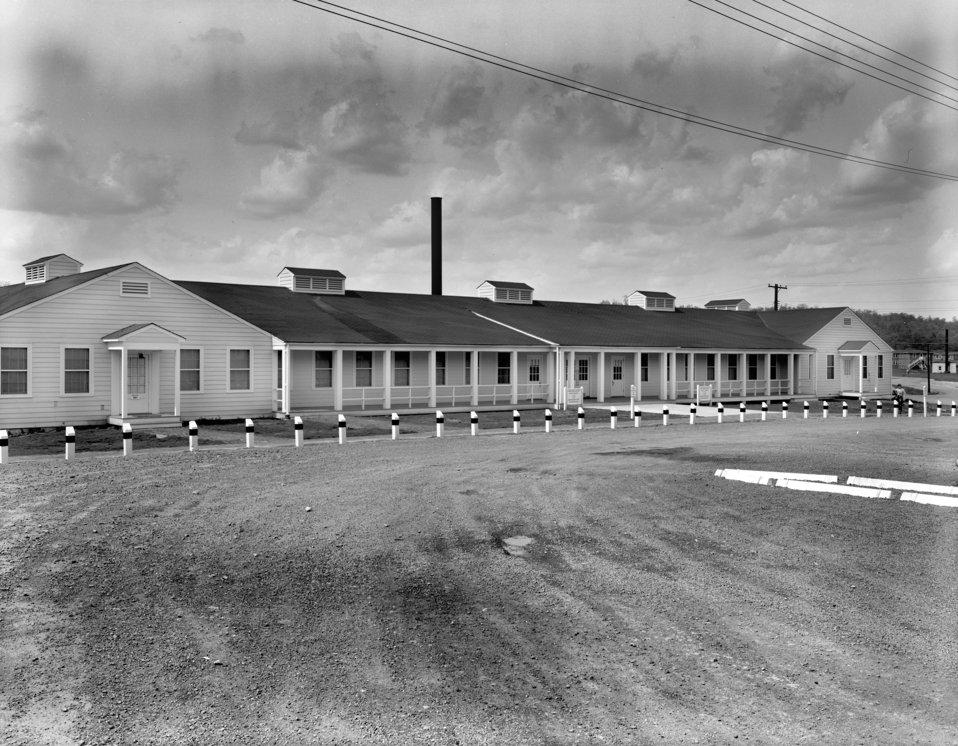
American Museum of Atomic Energy Oak Ridge 1949

5513-2 DOE photo Ed Westcott 4-22-1949 Oak Ridge Tennessee